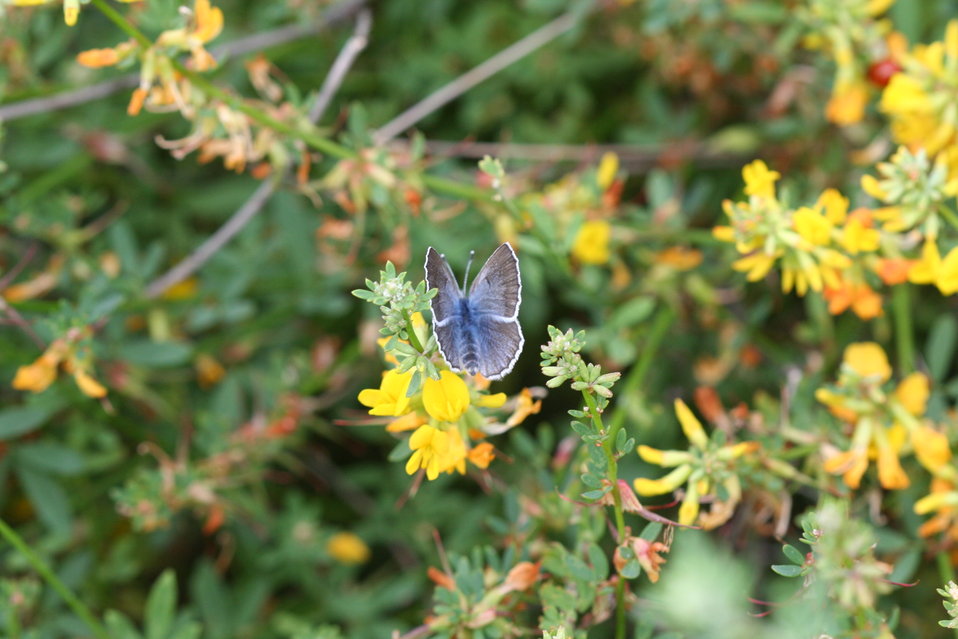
endangered Palos Verdes blue butterfly